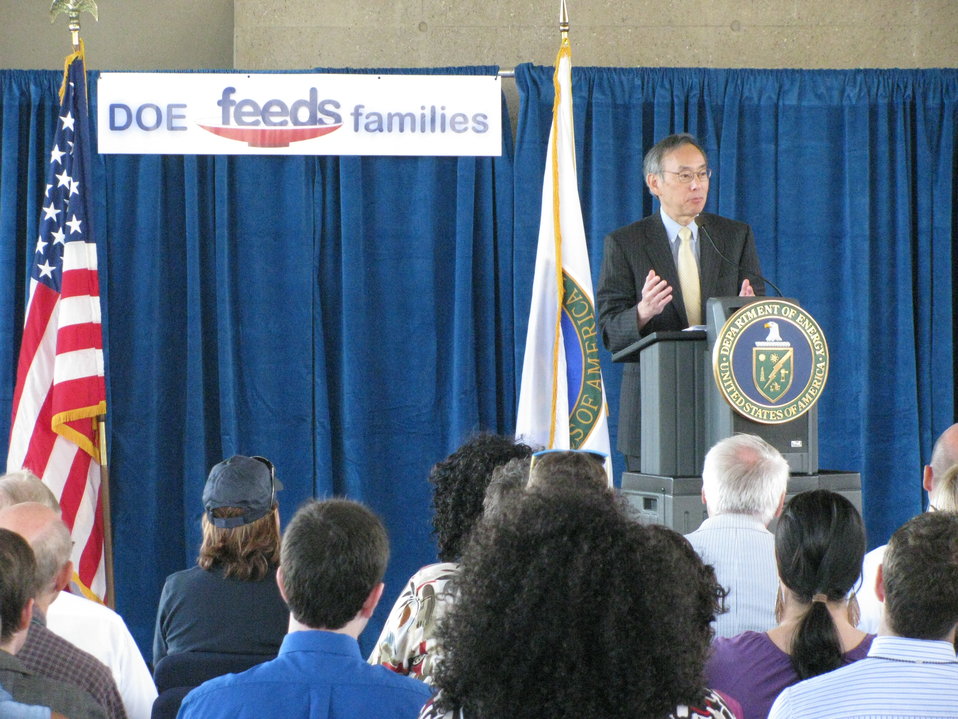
Secretary of Energy Steven Chu